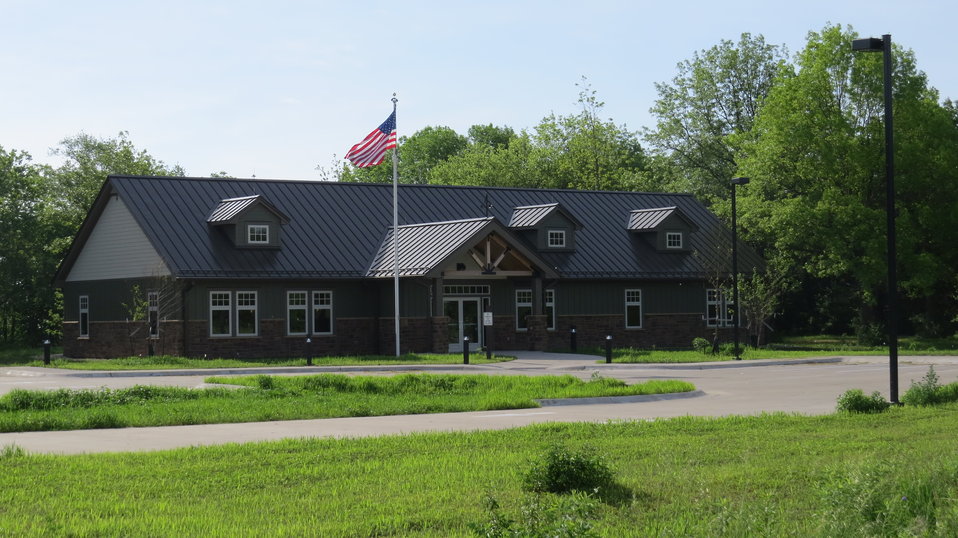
Port Louisa National Wildlife Refuge Headquarters and Visitor Center